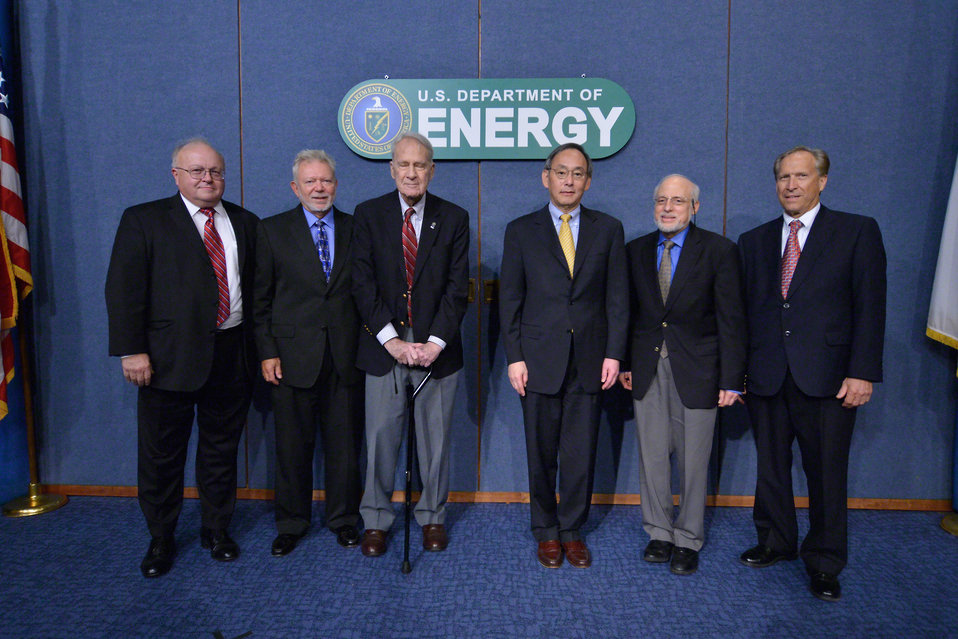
1 Science

Charter employees from the Office of Science with Secretary Steven Chu, current Secretary of Energy, and Secretary James Schlesinger, first Secretary of Energy.